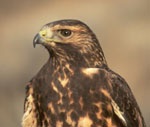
Snake River Birds of Prey National Conservation Area Swainsons Hawk Hawk Birds of Prey Wildlife